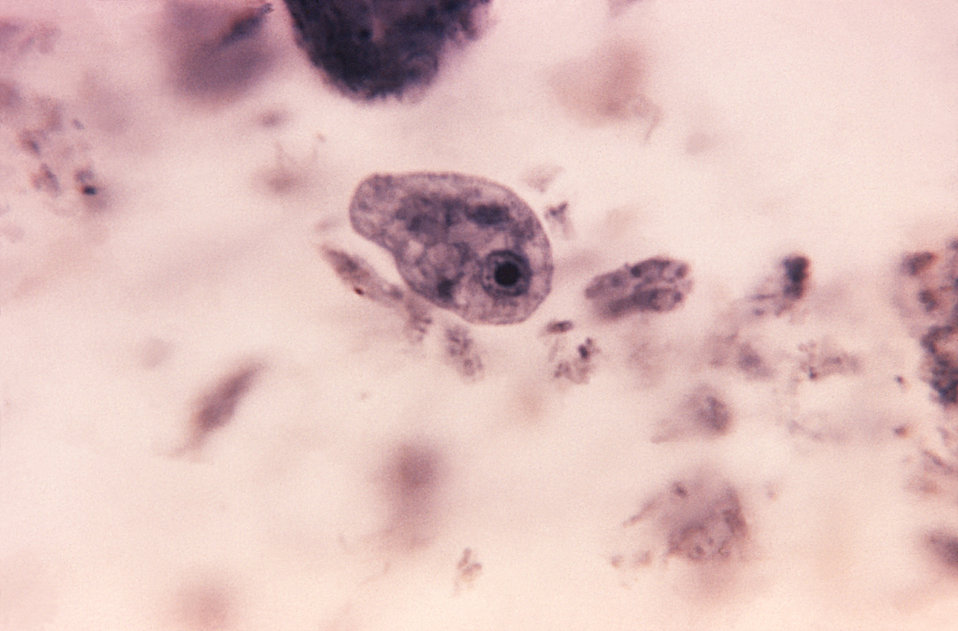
Iodamoeba b�ii cyst.